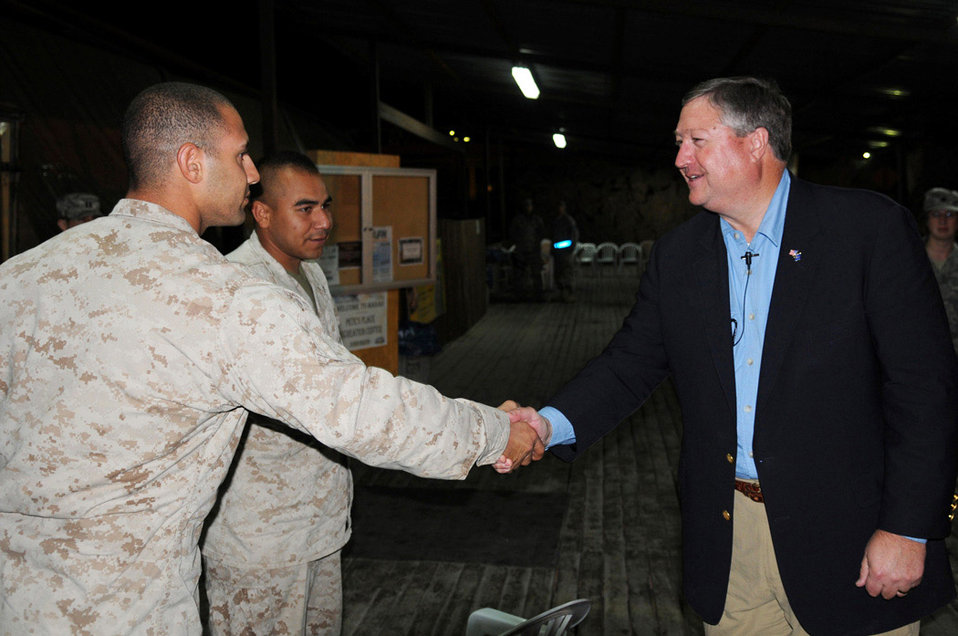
Air Force secretary visits Manas Airmen

Secretary of the Air Force Michael B. Donley visits with Marines transiting through the base Oct. 15 at Manas Air Base, Kyrgyzstan. Manas AB was the final stop in the secretary's first trip to the U.S. Air Forces Central area of responsibility.